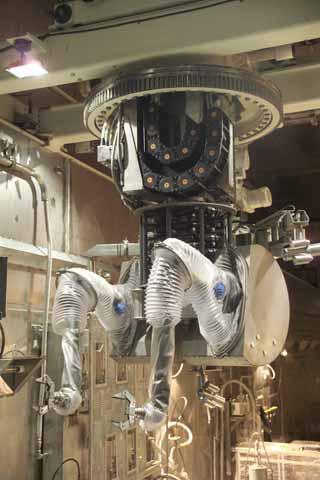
SPECIAL EQUIPMENT BEING CONSTRUCTED INSIDE THE SPALLATION NEUTRON SOURCE.

THE SPALLATION NEUTRON SOURCE (SNS) IS AN ACCELERATOR BASED NEUTRON SOURCE BEING BUILT IN OAK RIDGE, TENNESSEE BY A PARTNERSHIP OF SIX DEPARTMENT OF ENERGY LABORATORIES. SCHEDULED FOR COMPLETION IN 2006, THE SNS WILL PROVIDE THE MOST INTENSE PULSED POWER NEUTRON BEAMS IN THE WORLD FOR SCIENTIFIC RESEARCH AND INDUSTRIAL DEVELOPMENT.